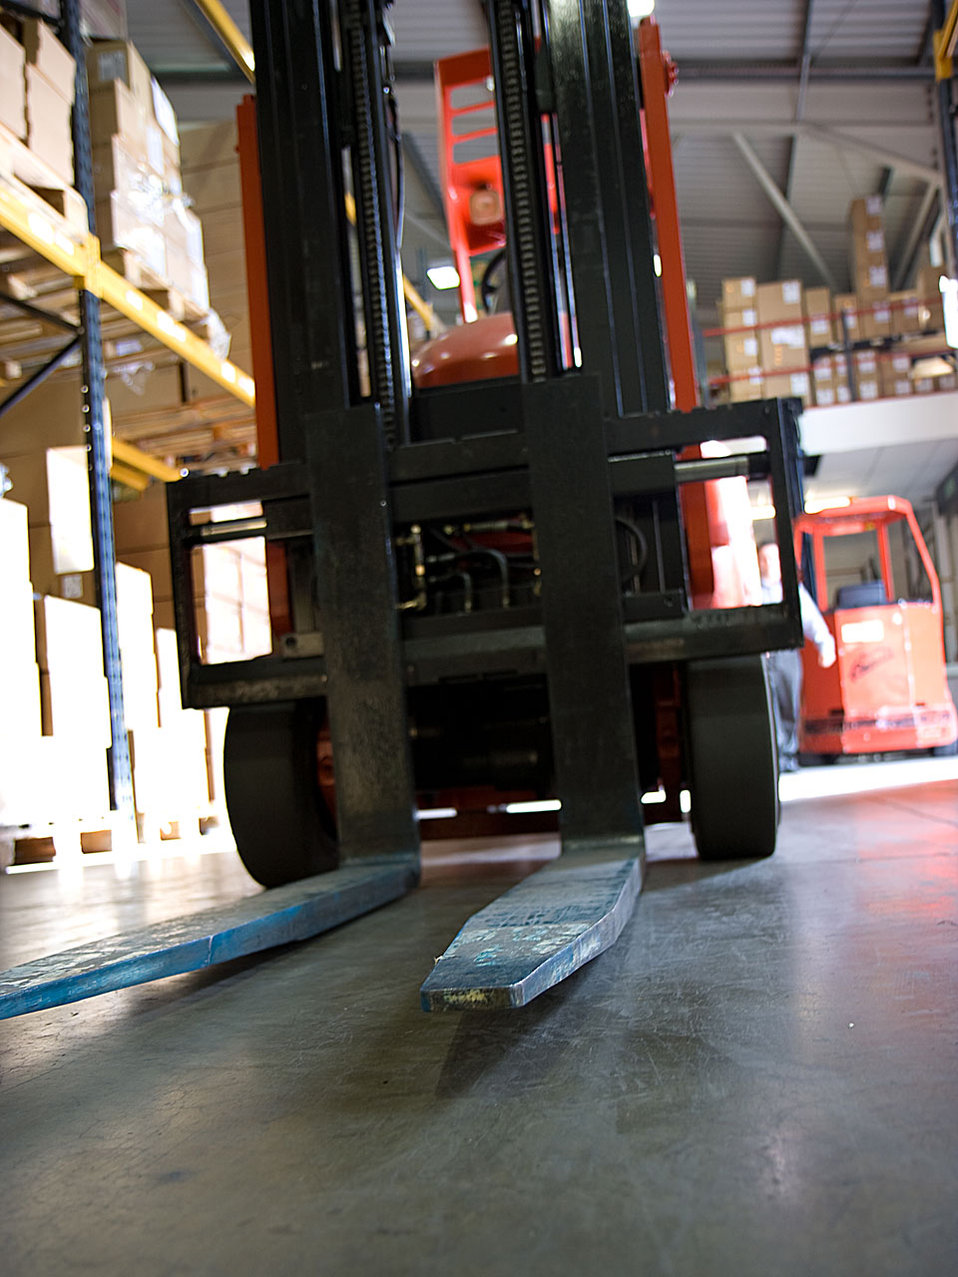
Forklift

A forklift in the warehouse.